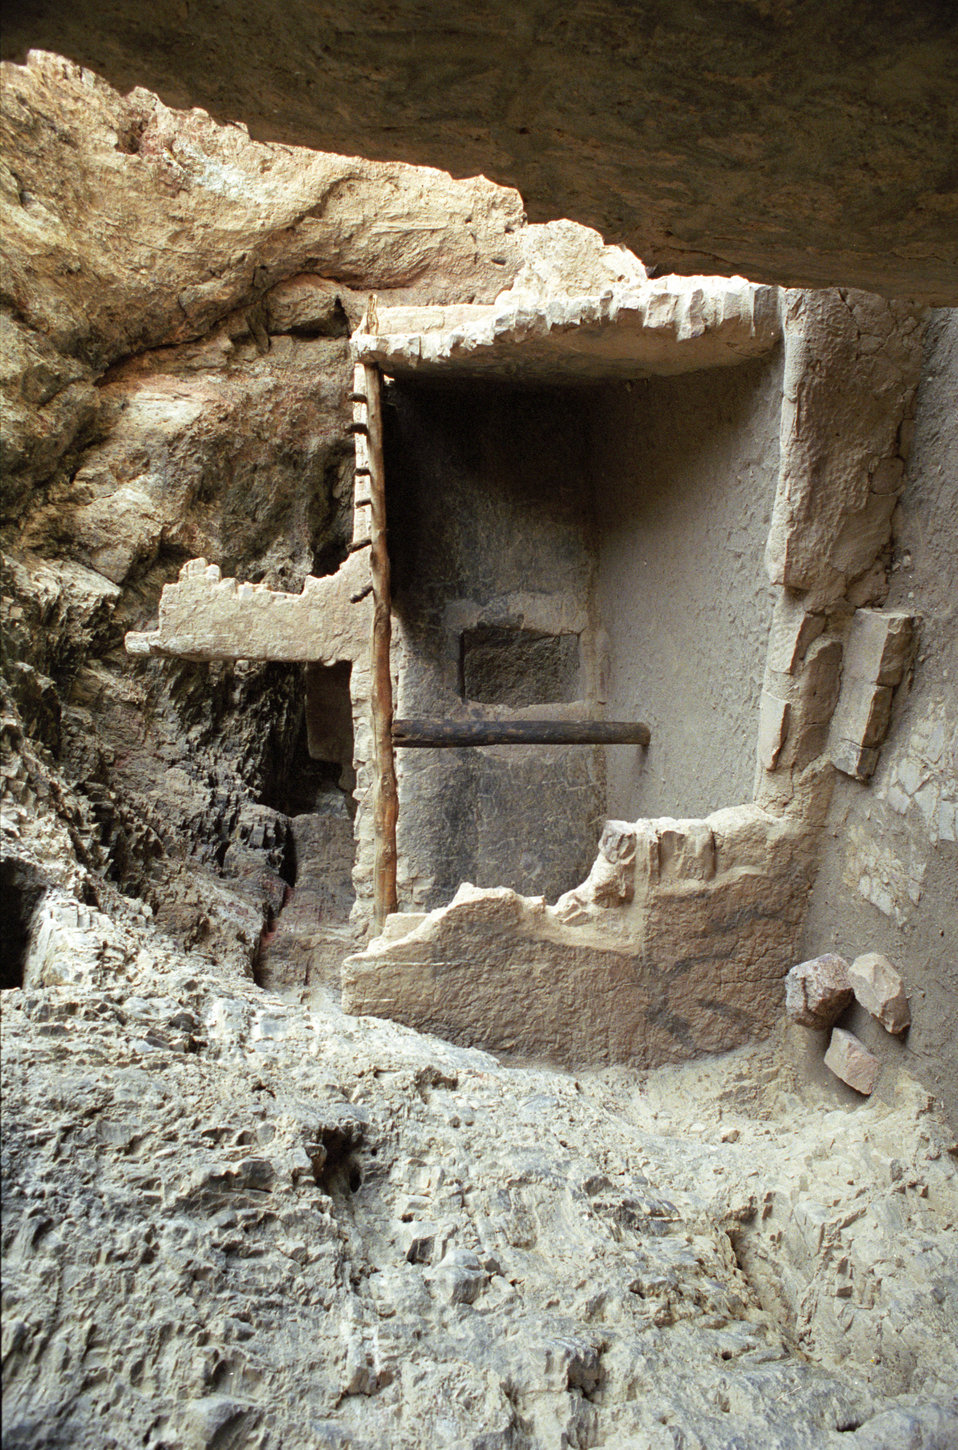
This photograph is of one of the two relatively intact cliff dwellings built by the Salado in the 14th Century in the Tonto Basin of the Tonto National Forest near Tucson, AZ on January 25, 2001. These Arizona cliff dwellings have beautiful multi-room living areas 2 stories tall and made of regional rock cemented together. Wood beams supported roofs and floors. Because of the dry clean atmosphere in those caves, the headers for doors and windows made of native wood have survived.